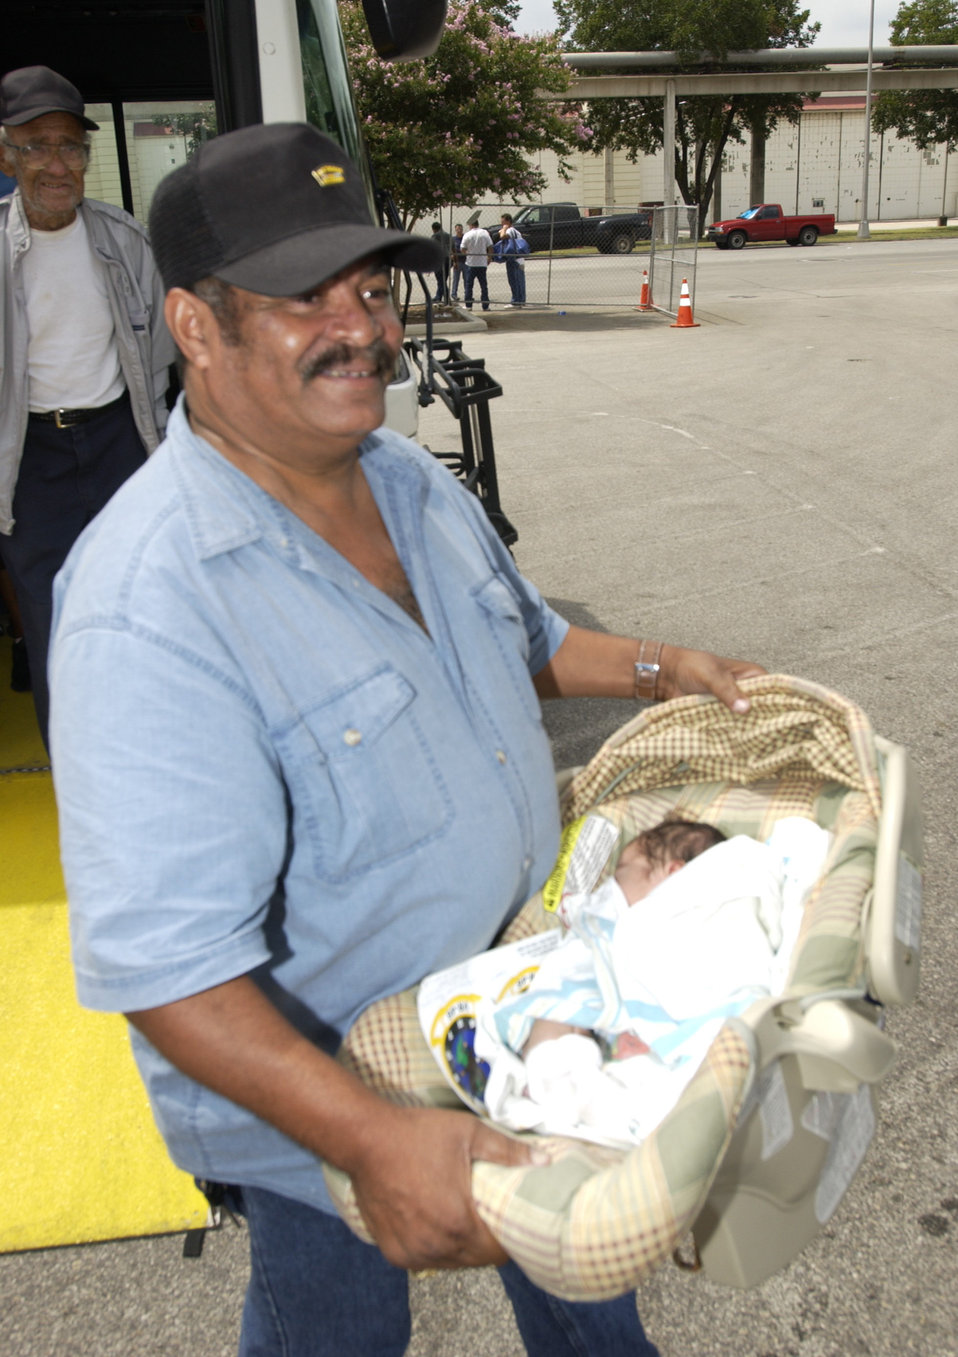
Price family glad to leave New Orleans

LACKLAND AIR FORCE BASE, Texas -- Ralf Price Sr. and his 6-day-old son, Jerry, arrive here from New Orleans on Sept. 3. The Hurricane Katrina evacuees are being inprocessed, given a medical checkup, fed and put into temporary shelters.